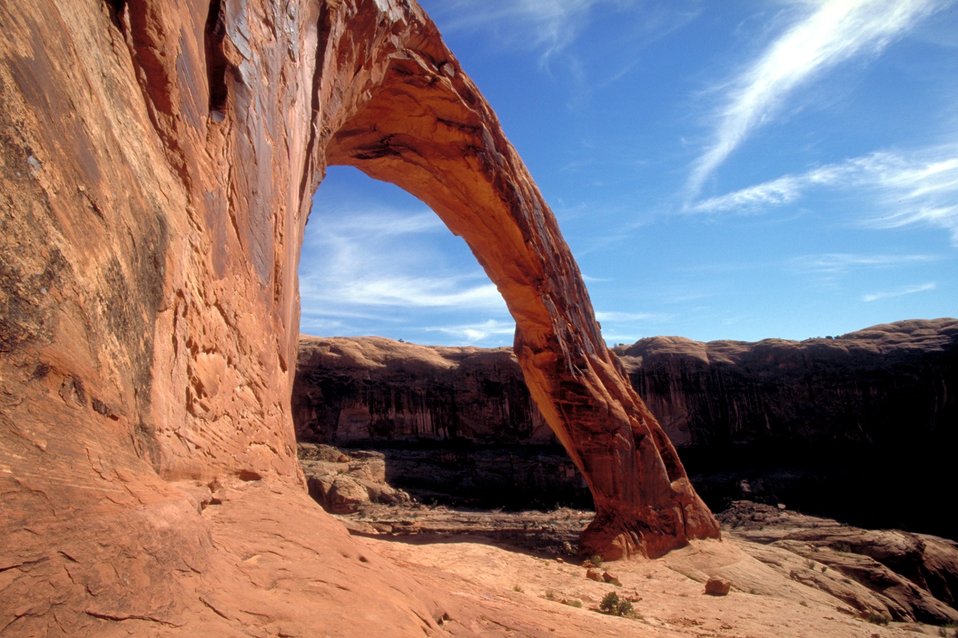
Corona Arch near Moab, Utah.